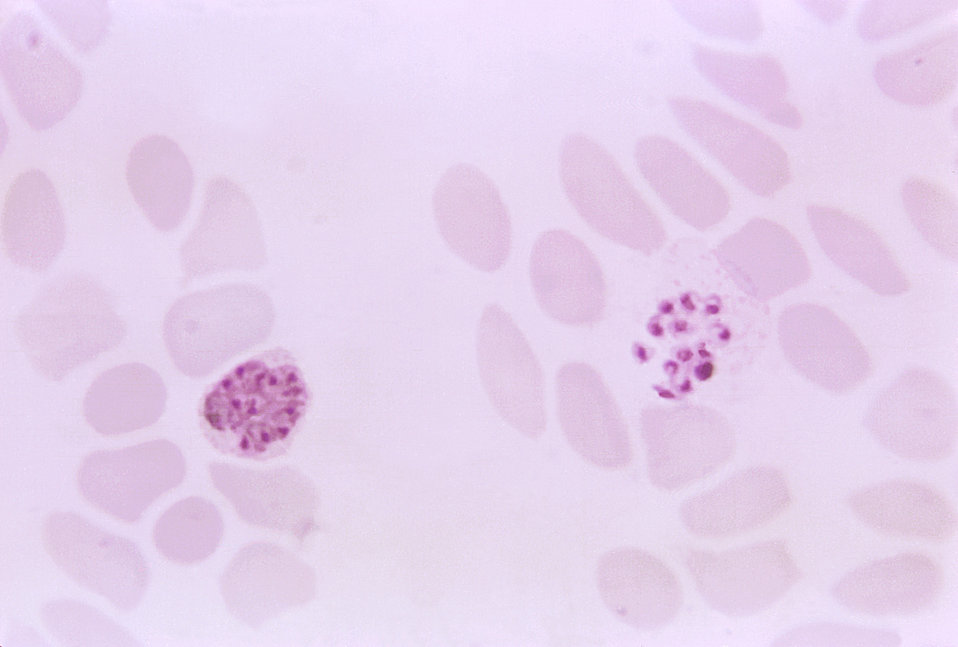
Magnified 1125X, this thin film photomicrograph of a blood smear, revealed the presence of two Plasmodium vivax schizonts, an immature form on the left, and a mature form on the right. Merozoites are undergoing development in these two infected erythrocytes, and they are almost ready to be liberated from the mature schizont.